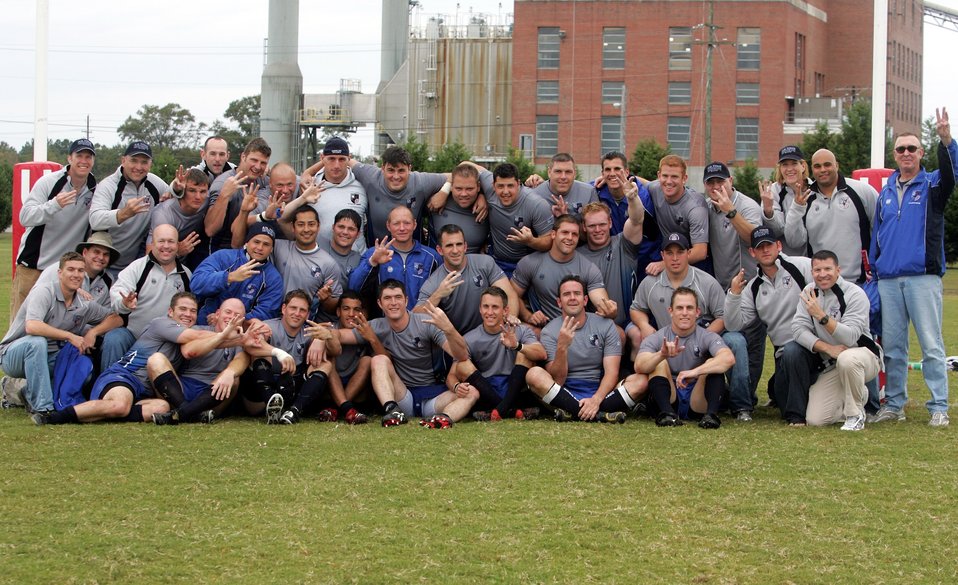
AF rugby team wins third straight Armed Forces title

The Air Force rugby team celebrates after winning its third consecutive Armed Forces Rugby Championship tournament title. The team was undefeated in this year's competition.